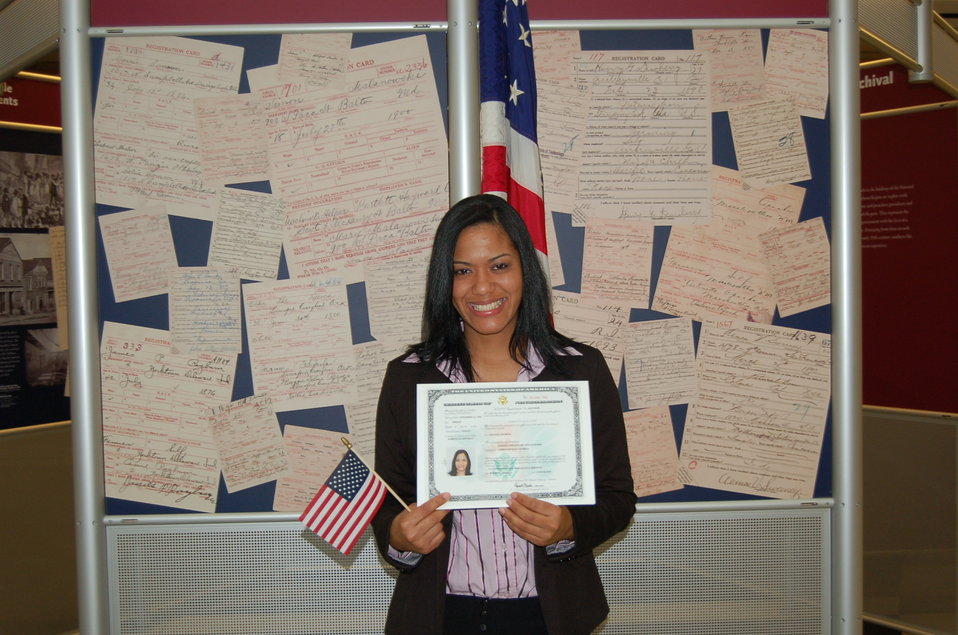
New Citizens